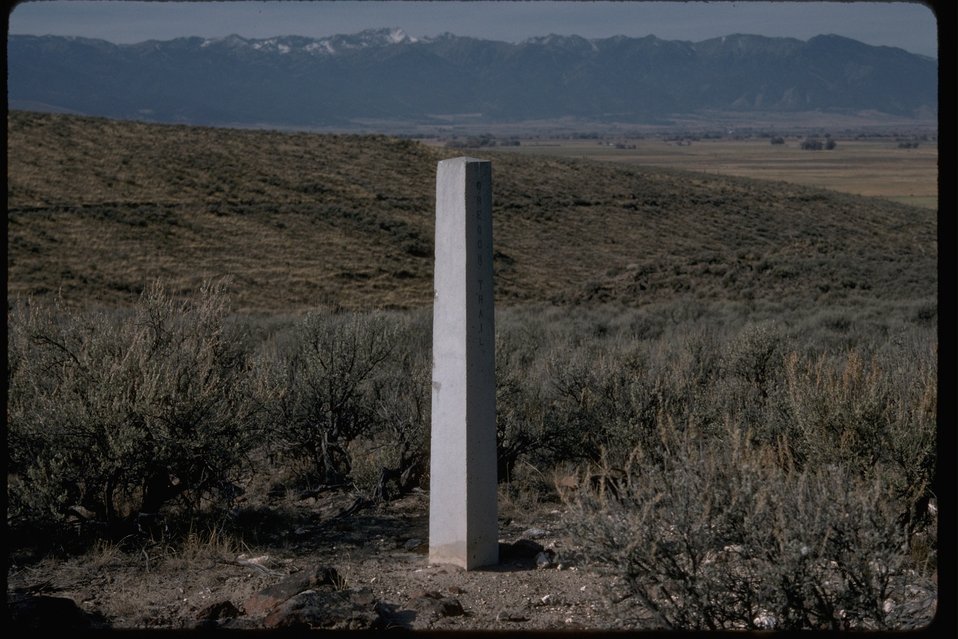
Oregon Trail Marker near the NHOTIC.